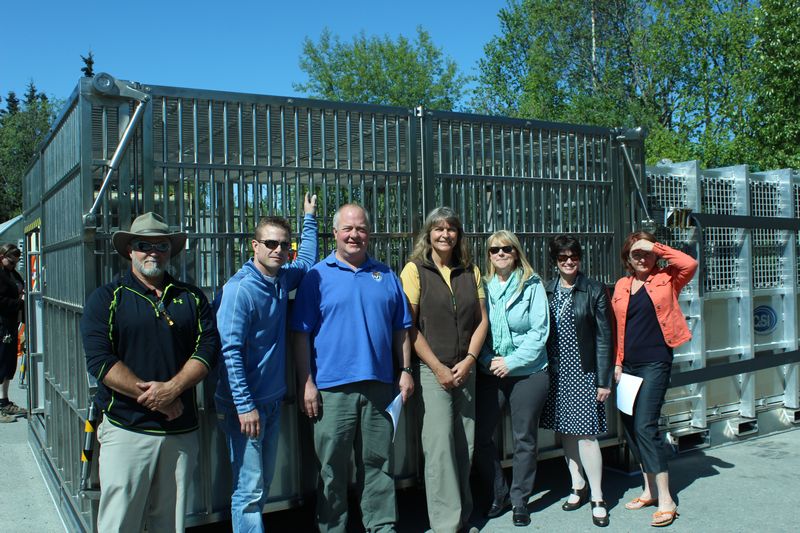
Press Conference on the polar bear holding module. USFWS/Rose Primmer